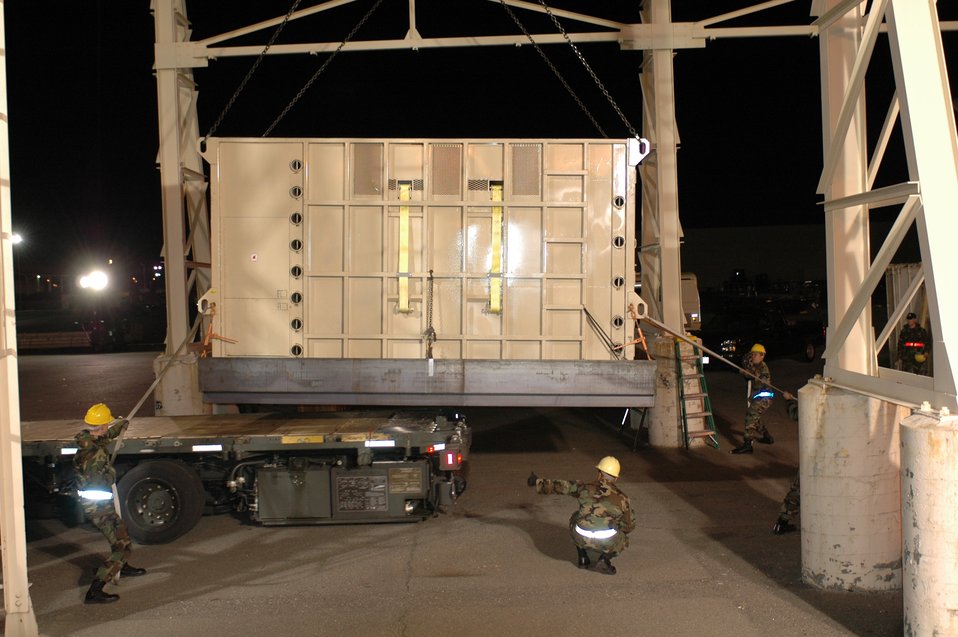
Operation Maggie Migration: mission of mammoth proportions

Airmen from the 60th Aerial Port Squadron prepare to load Maggie onto the truck that will transport her to her new home near San Andreas, Calif. Maggie was moved to California for the warmer climate.